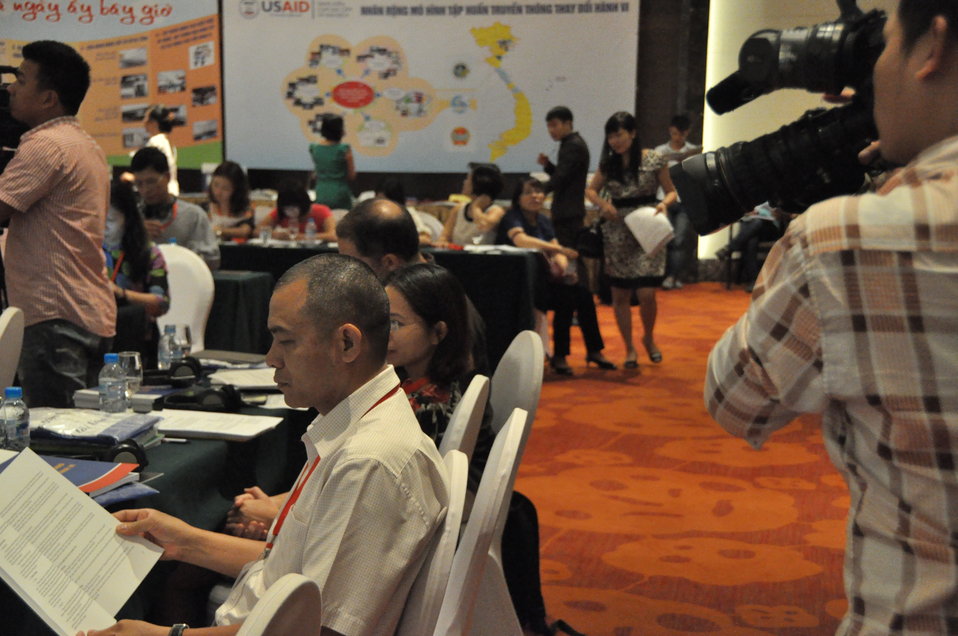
USAID Avian and Pendemic Influenza Initiative Dissemination Workshop

Dissemination Workshop
Hanoi, August 6, 2013.